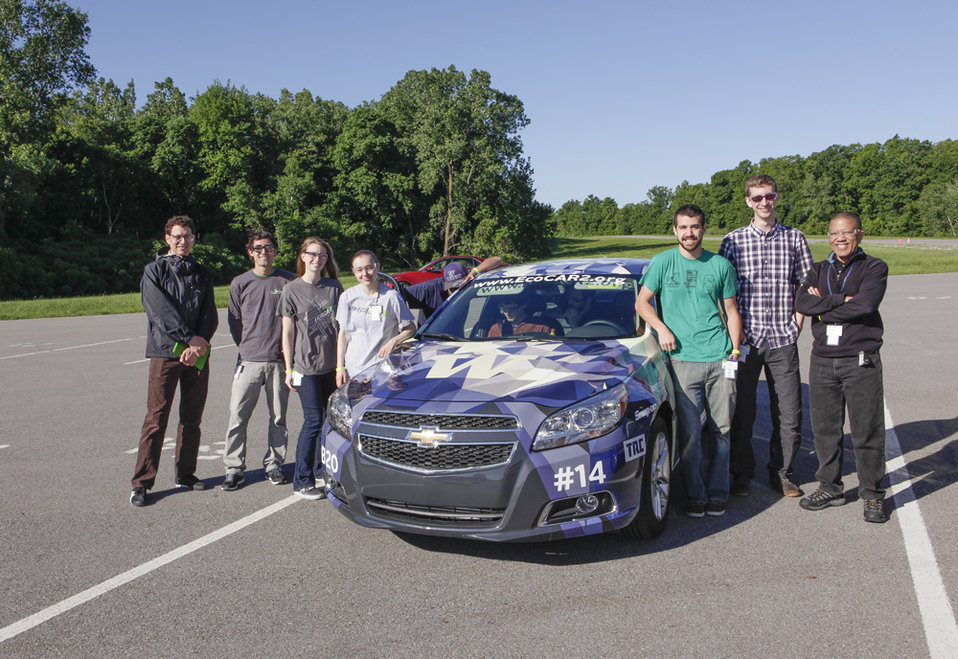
After three years of intense competition, team from the University of Washington came in second in EcoCAR 2. The team demonstrated the most energy-efficient vehicle, a B20 biodiesel parallel plug-in hybrid, as well as the lowest well-to-wheel greenhouse gas emissions. | Photo courtesy of EcoCAR 2.